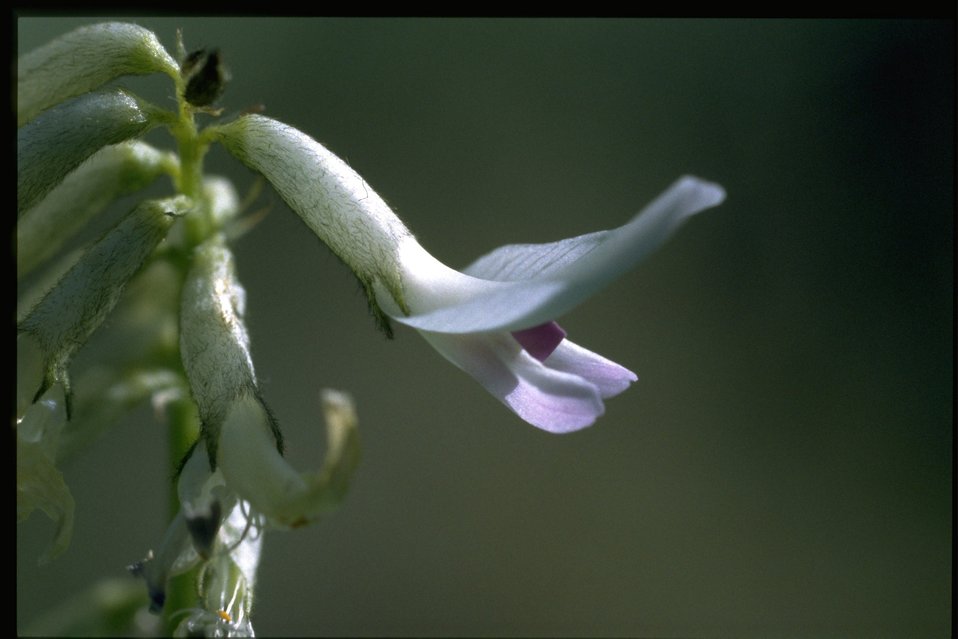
Closeup shot of Idaho milkvetch (Astragalus conjunctus).